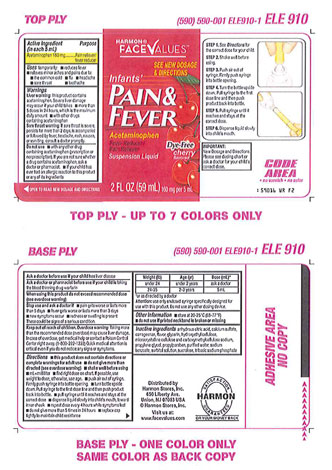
Recalled - Acetaminophen infant suspension liquid

November 1, 2013 – Product Recall – Perrigo Initiates Nationwide Voluntary Product Recall of Acetaminophen Infant Suspension Liquid, 160 Mg/5 Ml, Due to a Potential Defect with the Co-packaged Oral Syringe.